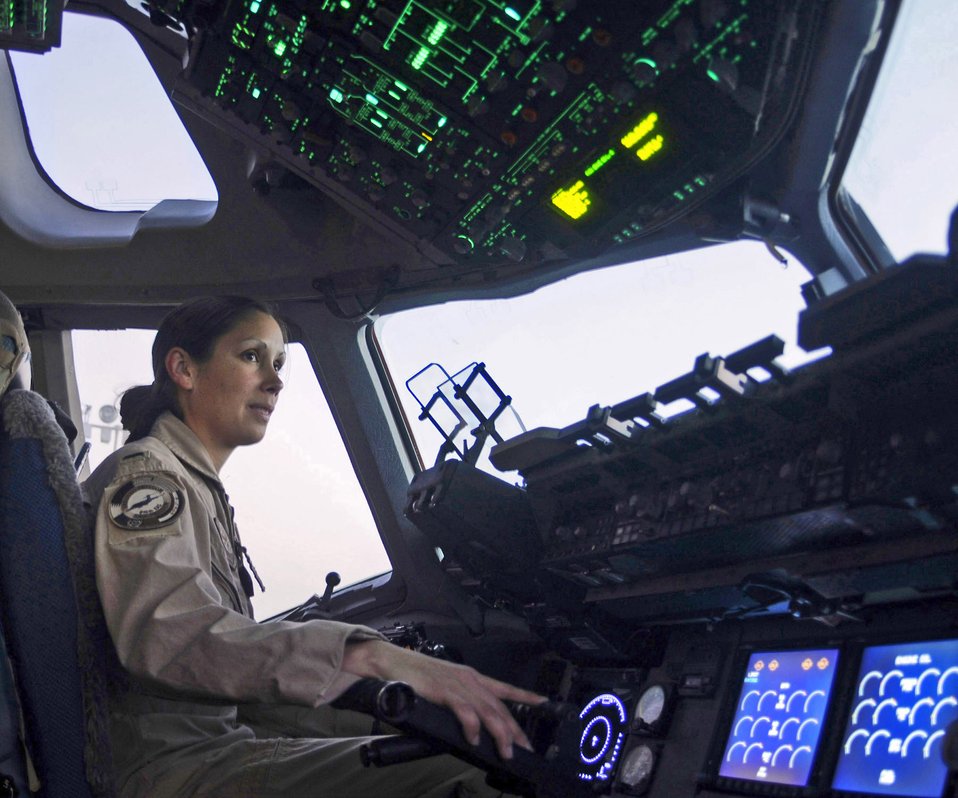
Mother daughter race together

1st Lt. Jessica Lopez prepares for a mission in a C-17A Globemaster III Feb. 13. Lieutenant Lopez, a pilot from Charleston Air Force Base, S.C., flies airlift missions over Iraq and Afghanistan from her deployed location in Southwest Asia.